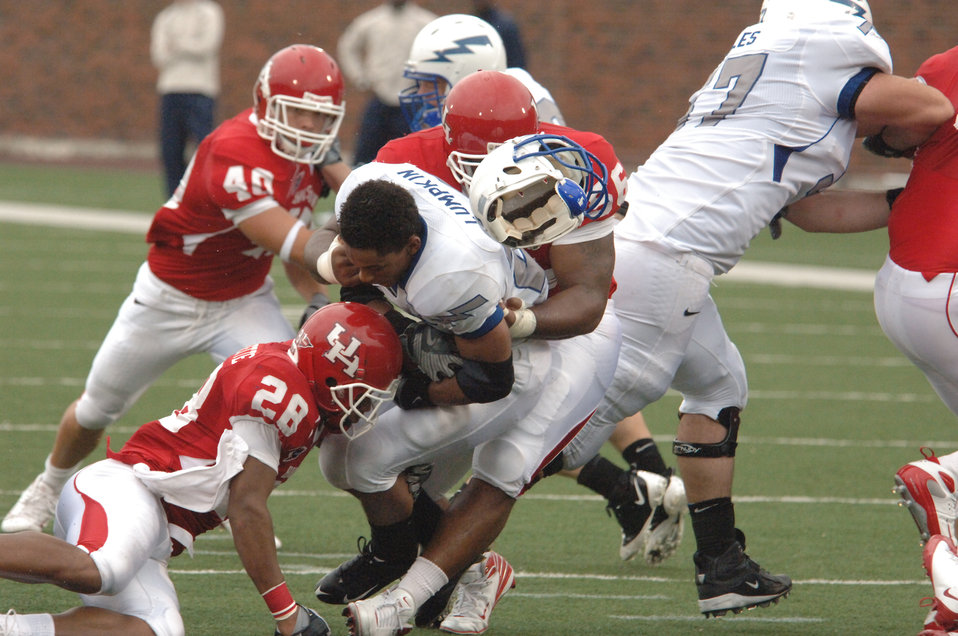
Football: Falcons hold off Cougars in wake of Hurricane Ike

U.S. Air Force Academy tailback Kyle Lumpkin loses his helmet in the pile but still manages to move the sticks Sept. 13 in Dallas. Lumpkin carried 20 times for 74 yards as the Falcons grounded out their third win of the season by topping Houston 31-28.